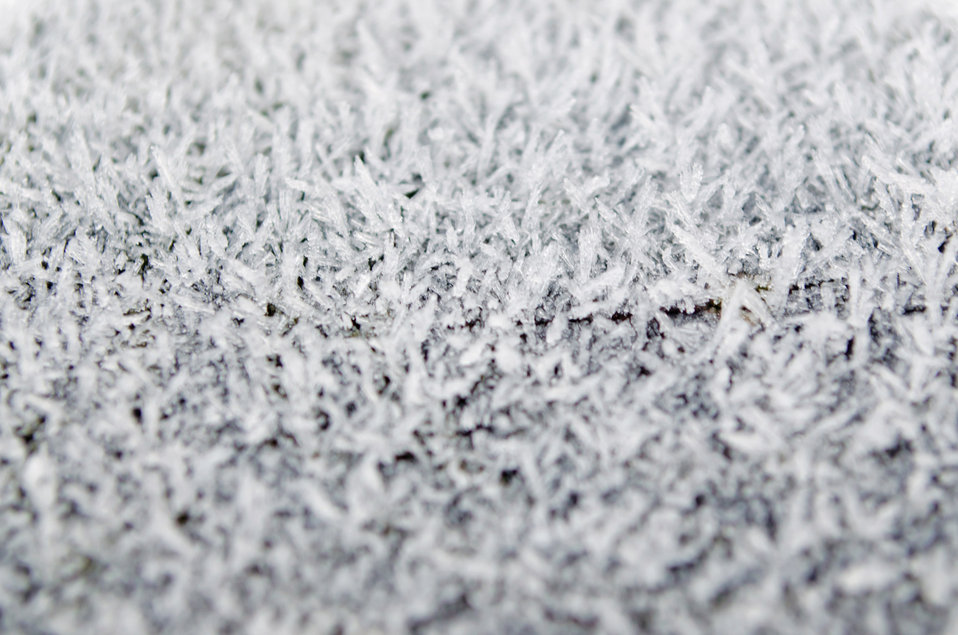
Frost - background.